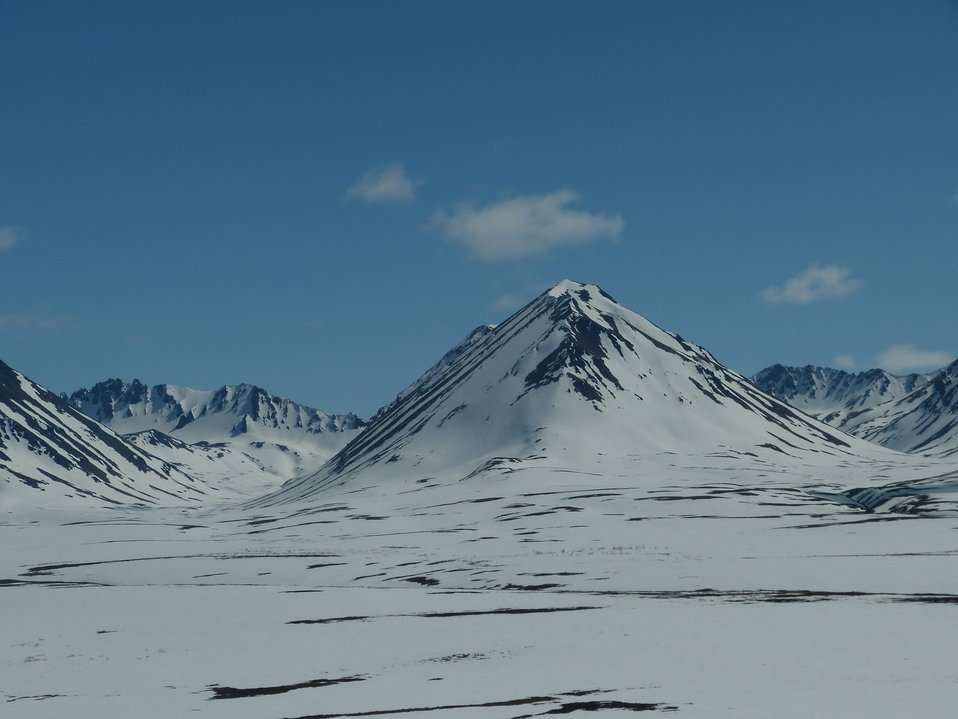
Kilbuck Mountains May2013 KSowl

Cliff-nesting raptor survey, Kilbuck Mountains, Yukon Delta National Wildlife Refuge

Photo credit: Kristine Sowl,
USFWS, YDNWR